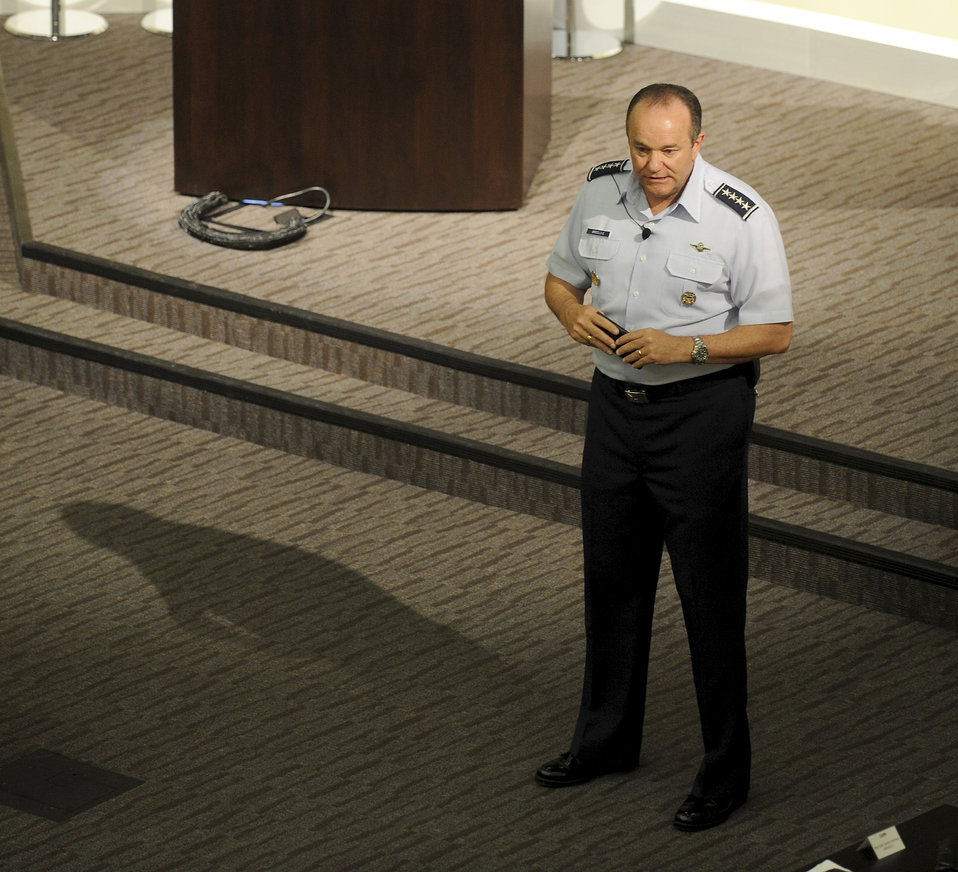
AF leaders gather to address sexual assault prevention, response

Gen. Phillip Breedlove speaks to attendees of the Sexual Assault Prevention and Response Leader Summit at the Smart Building on April 17, 2012, at Joint Base Andrews, Md. Breedlove is the Air Force Vice Chief of Staff.